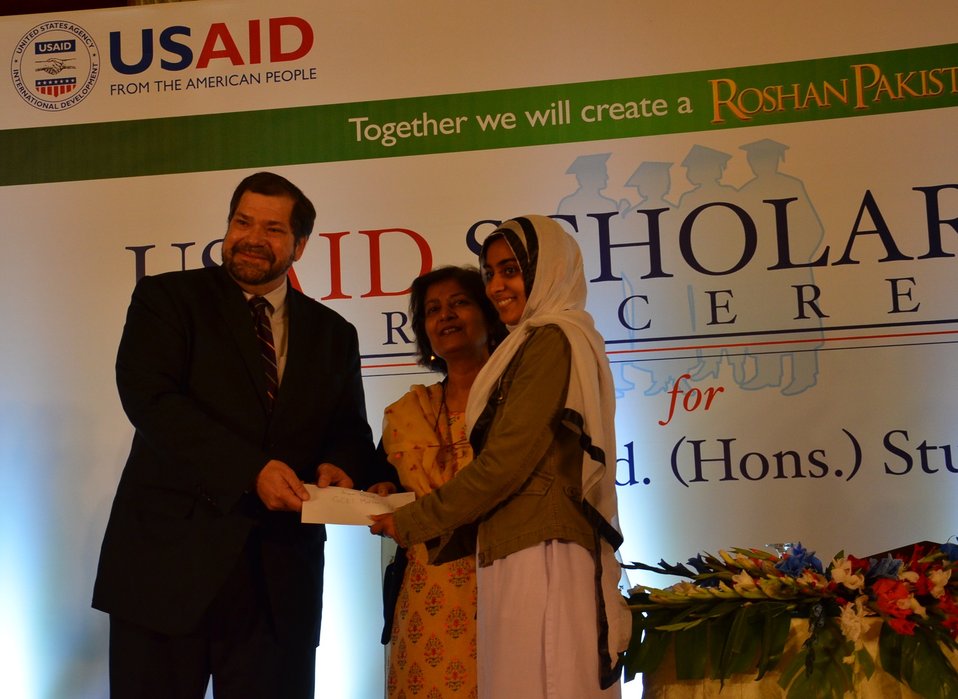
Mr. Bekken awarding scholarship to student